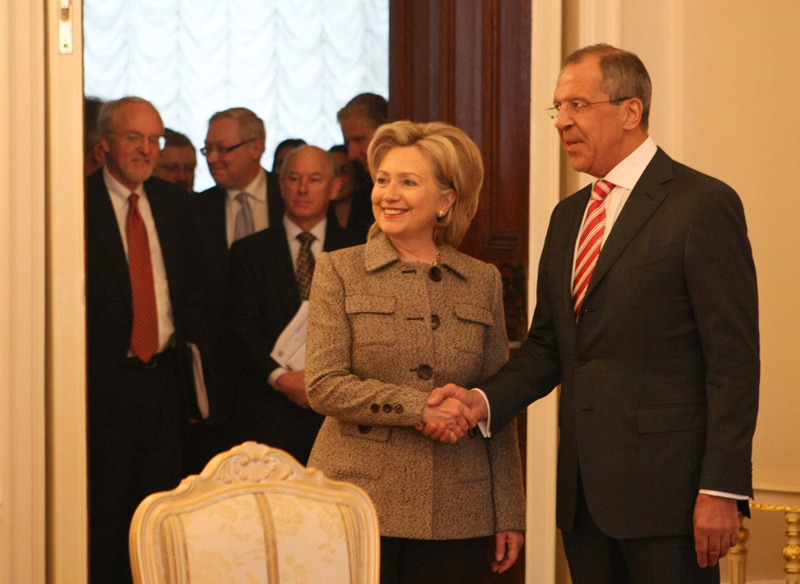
Secretary Clinton With Russian Foreign Minister Sergey Lavrov

U.S. Secretary of State Hillary Rodham Clinton shakes hands with Russian Foreign Minister Sergey Lavrov before their talks in Moscow, Russia March 18, 2010.